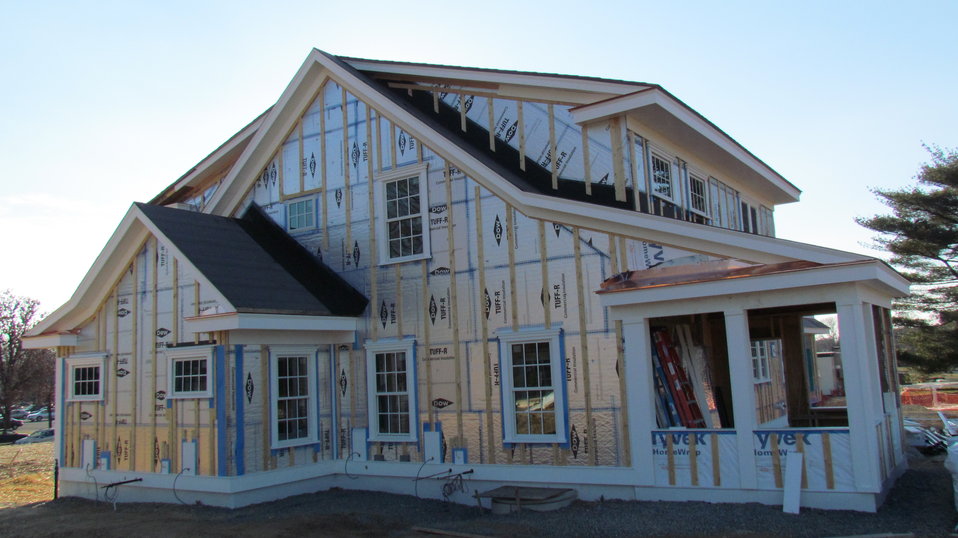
Vertical furring strips attached to exterior of NZERTF. These strips are attached to framing members located under the four inches of exterior insulation. Cement fiberboard siding will be attached to the furring strips.